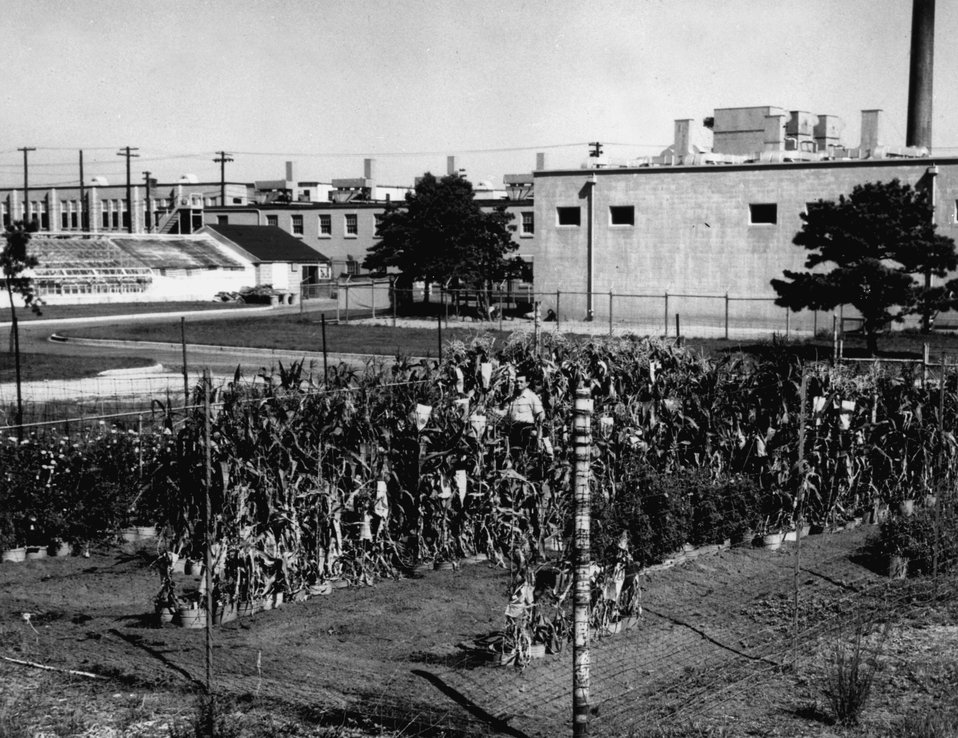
Scene behind the biology building at Brookhaven National Laboratory, Upton, New York. Corn and other plants are grown in pails so they may be transferred in and out of the radiation field two miles away, where plants are exposed to gamma rays from radioactive cobalt 60. c. 1955